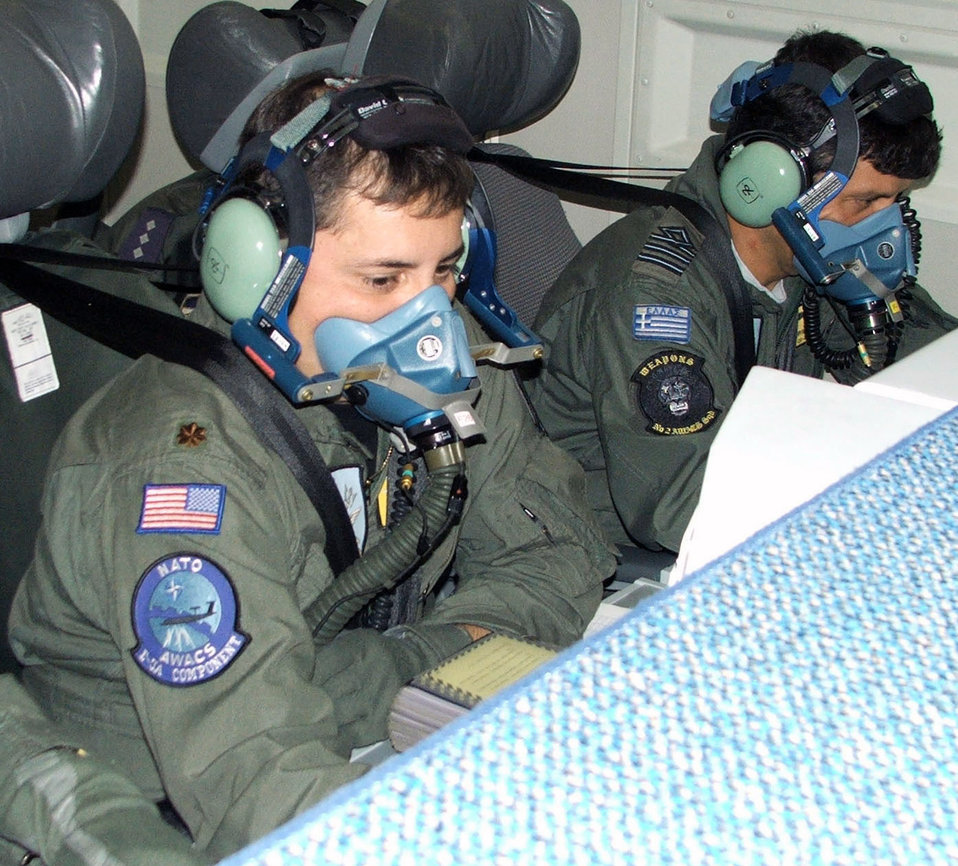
NATO AWACS conducts Strike Eagle dogfights

Maj. Sean Spradlin and Maj. Ioannis Tsakiris examine their radars for enemy aircraft onboard a NATO E-3A Sentinel aircraft at Seymour Johnson Air Force Base, N.C., Aug. 15. On this aircraft there were Air Force members from Turkey, Portugal, United States, Denmark, Germany, Greece, and Canada.